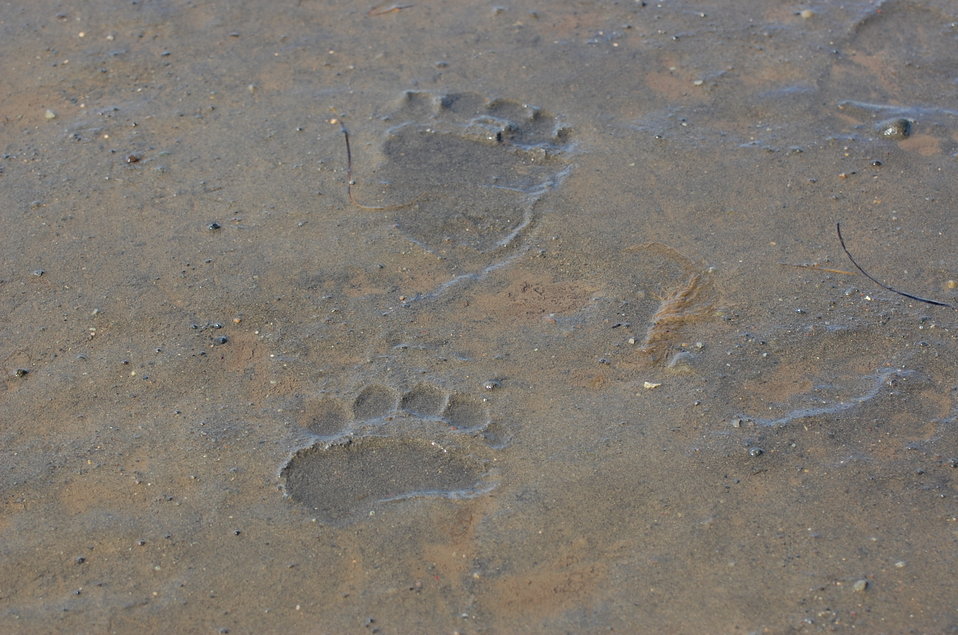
Bear tracks in Kinzarof Lagoon

Kinzarof Lagoon, Izembek National Wildlife Refuge